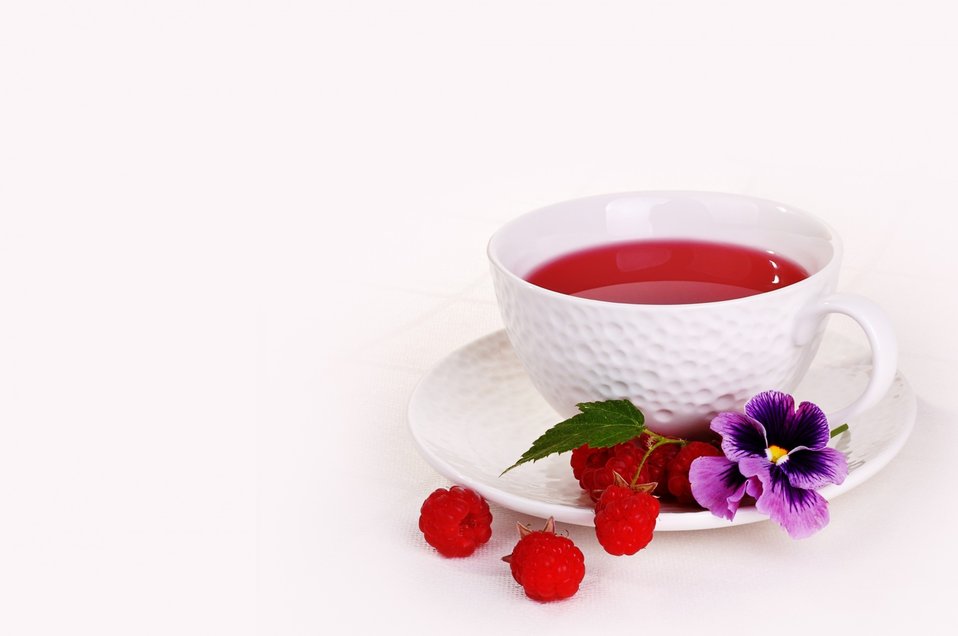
Summer tea party

White mug with tea and raspberry.